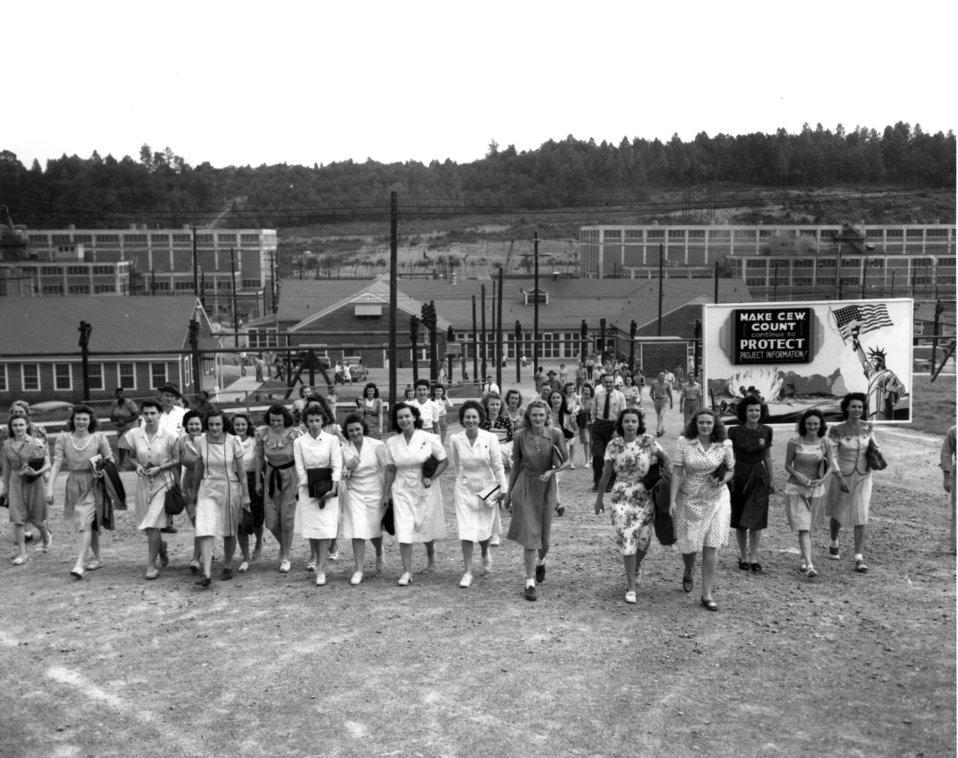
Daily Life at Oak Ridge